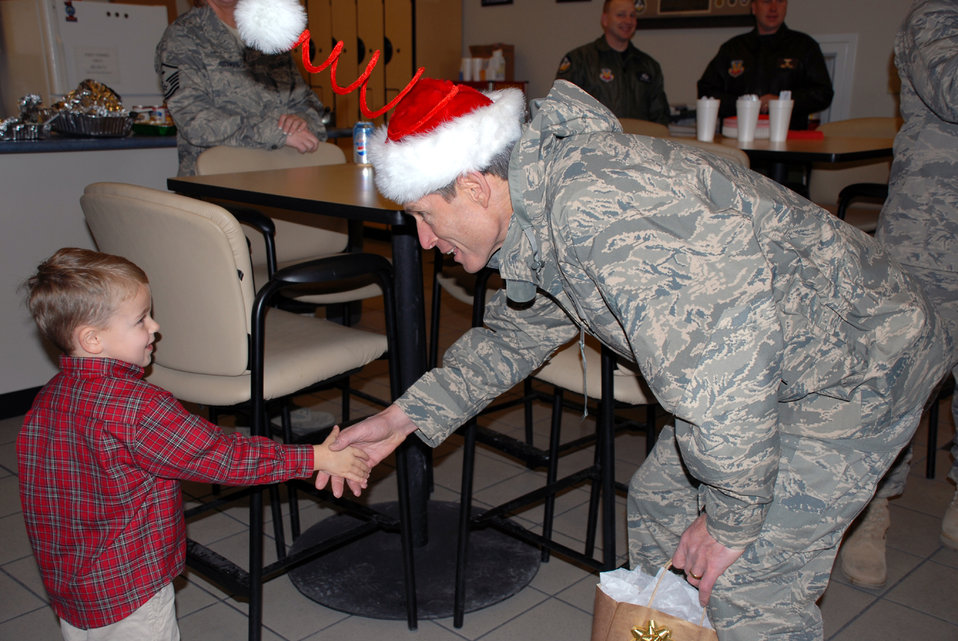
CSAF, Mrs. Schwartz visit Creech AFB

Matthew Gough, son of Lt. Col. Chris Gough, 42nd Attack Squadron commander at Creech Air Force Base, Nev., gives Gen. Norton Schwartz, Air Force chief of staff, a Christmas gift from the men and women of the 42nd ATKS. General Schwartz and his wife Suzie spent the afternoon of Christmas day with squadron personnel and he was given a MQ-9 Reaper T-shirt.